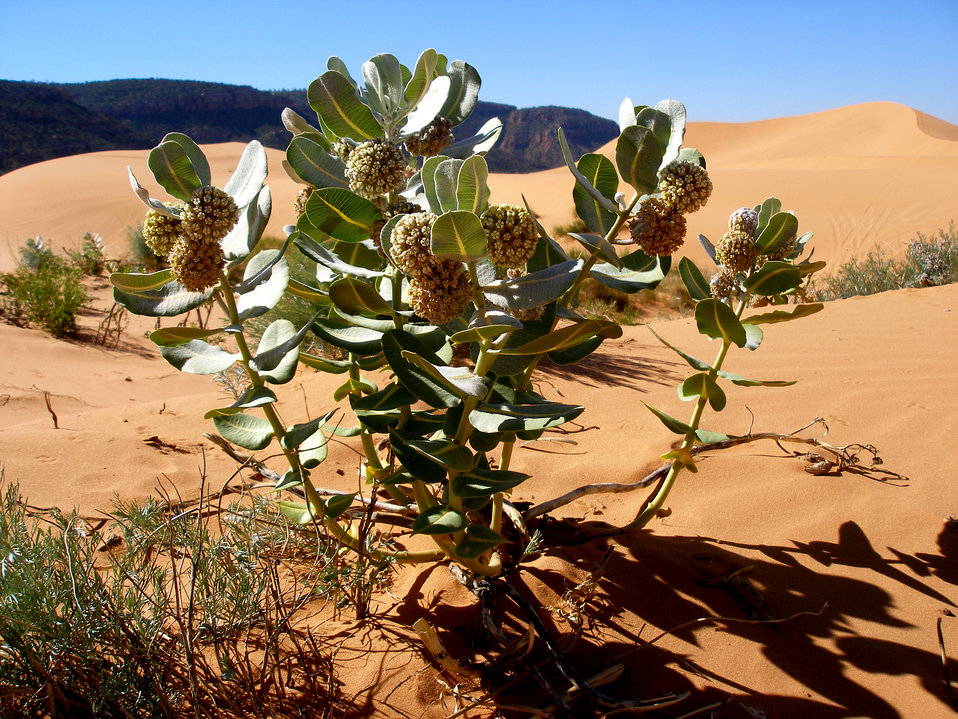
Welsh milkweed (Asclepias welshii)

This species is restricted to active sand dunes derived from Navajo Sandstone in sagebrush, juniper and Ponderosa pine communities between 5,000 and 6,230 ft. in elevation. It is endemic to Kane County, UT, and Coconino, Navajo & Apache counties, AZ. The Welsh milkweed is listed threatened.